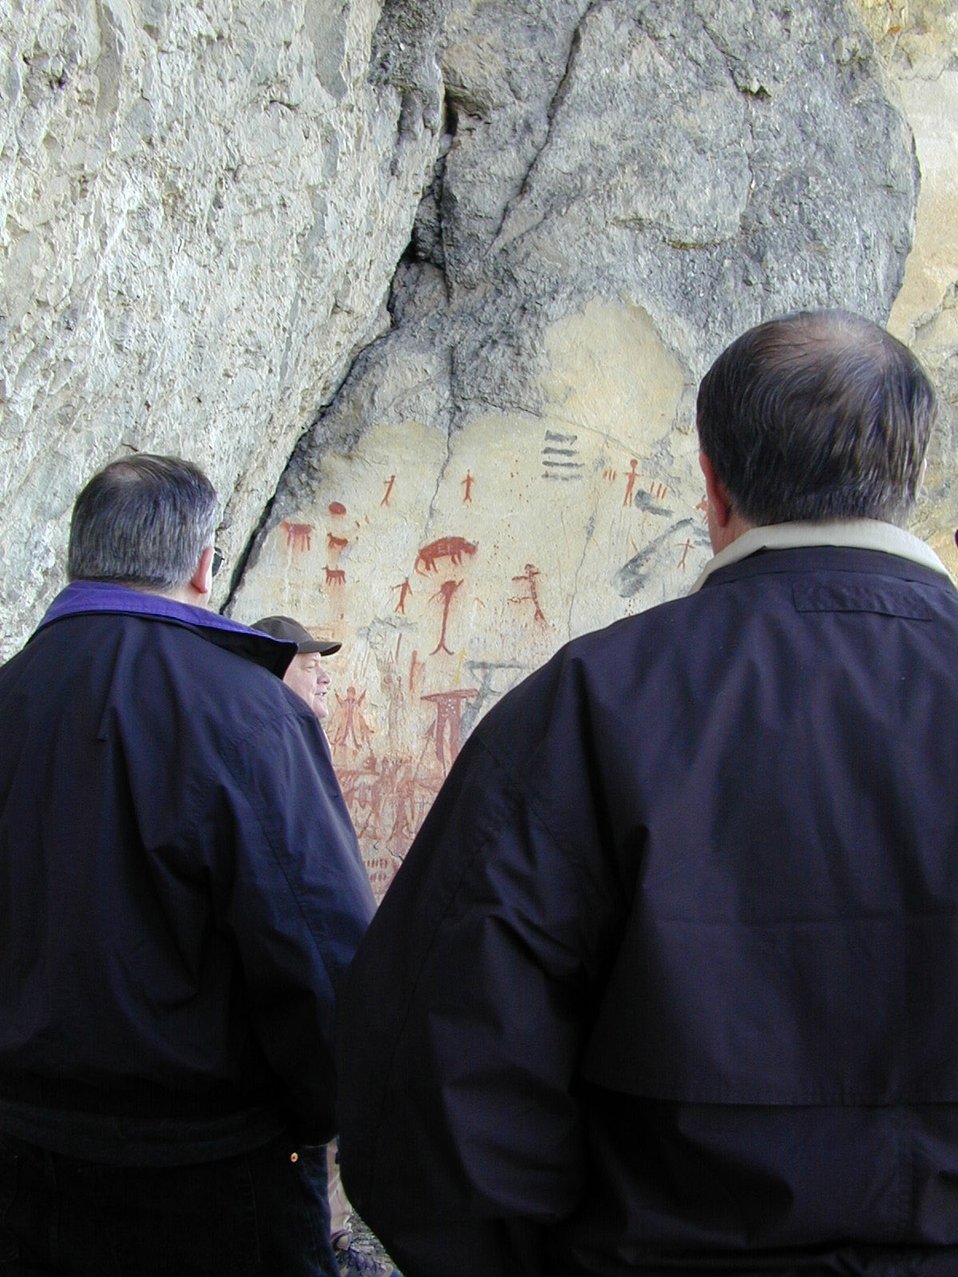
Birch Creek Valley Idaho Falls Field Office USRD Upper Snake River District